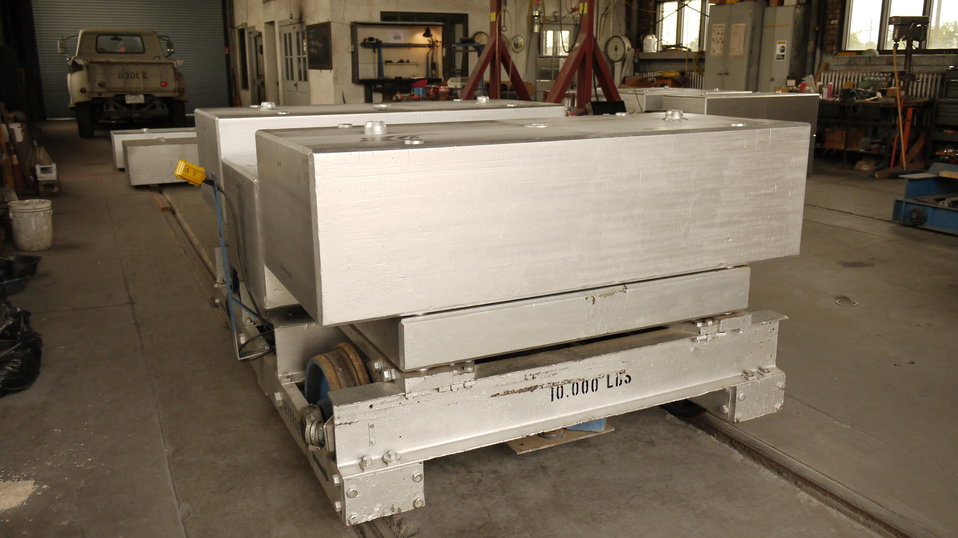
This is the 10,000 lb. test weight cart with some 10,000 lb. test weight standards loaded on the cart after the weights had been calibrated at the U.S. Department of Agriculture’s (USDA) Grain Inspection, Packers, and Stockyard Administration (GIPSA) Master Scale Depot in Chicago, IL on Jul. 2, 2013. USDA GIPSA entered into an agreement with the National Institute of Standards and Technology (NIST) and the Association of American Railroads (AAR) in 1980 transferring responsibility to USDA’s GIPSA to maintain the Master Scale facility in Chicago, IL and calibrate all the master scales in the continental U.S. annually.